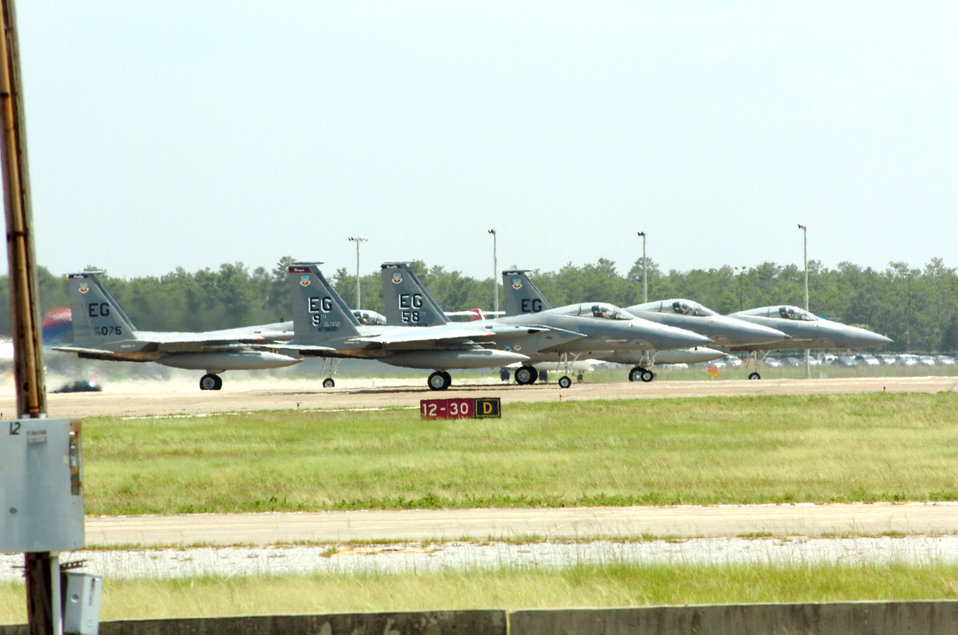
Hurricane Dennis: Officials issue stop movement

EGLIN AIR FORCE BASE, Fla. -- F-15 Eagles with the 33rd Fighter Wing here prepare to take off for Wright-Patterson Air Force Base, Ohio, in anticipation of Hurricane Dennis on July 8. People and aircraft have also evacuated nearby Tyndall AFB and Hurlburt Field.